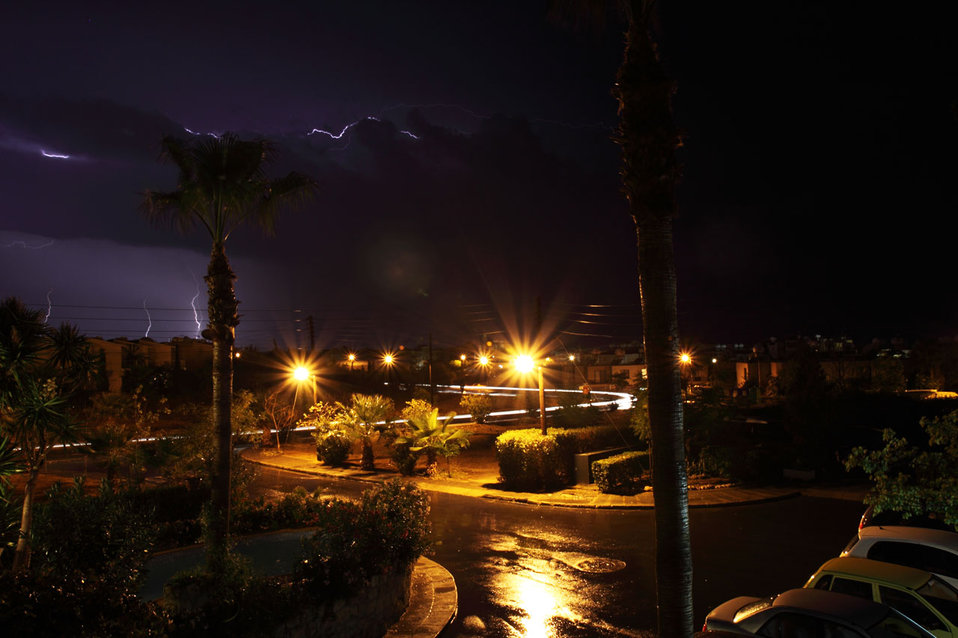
Island storm

Lightnings during storm.